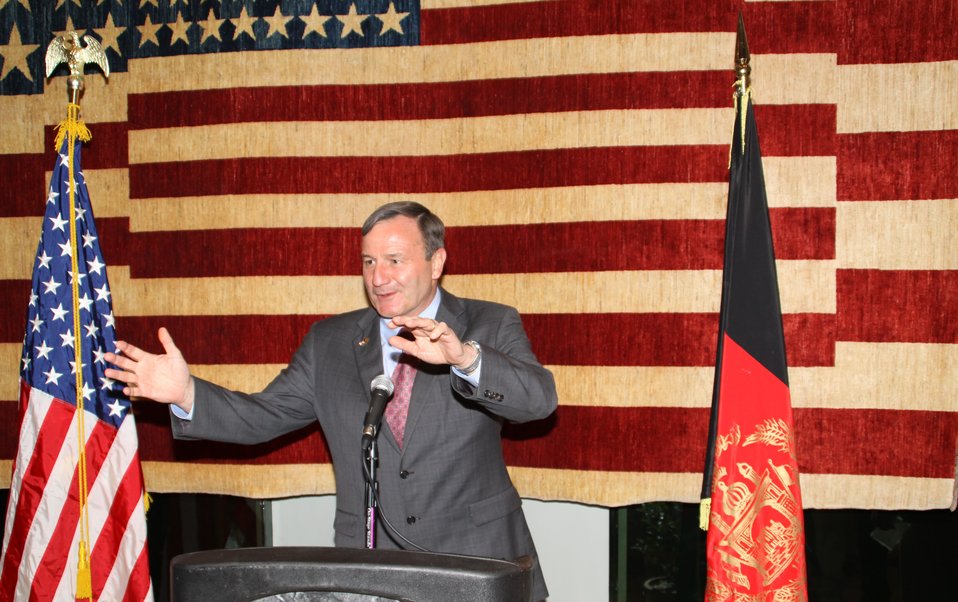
US Embassy Town Hall July 21, 2010